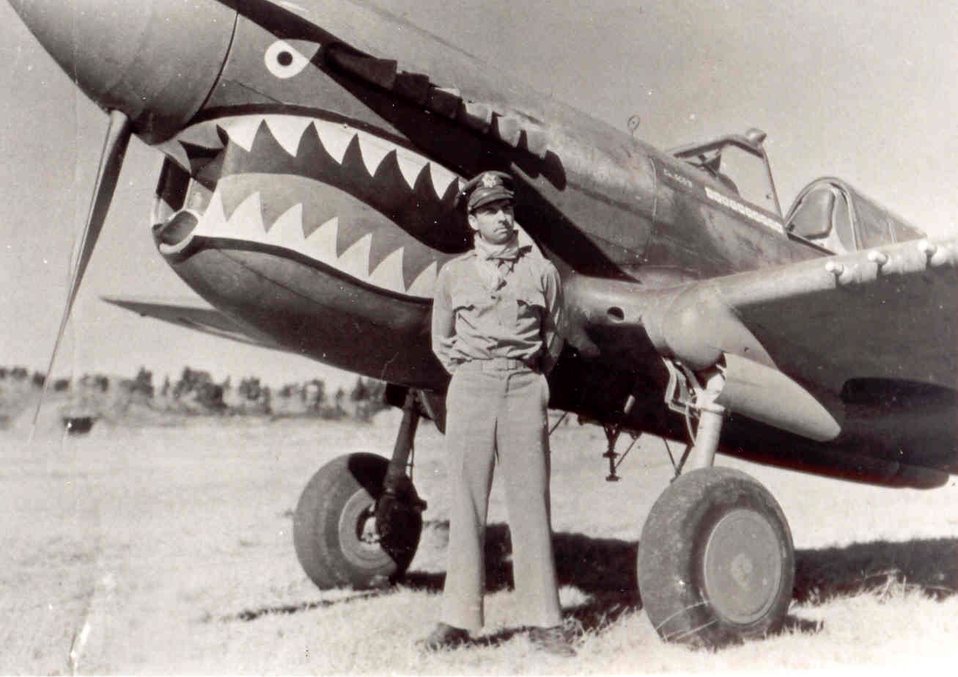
Brig. Gen. Robert L. Scott Jr. dies

Col. Robert L. Scott Jr. in front of a P-40 Warhawk in 1943.